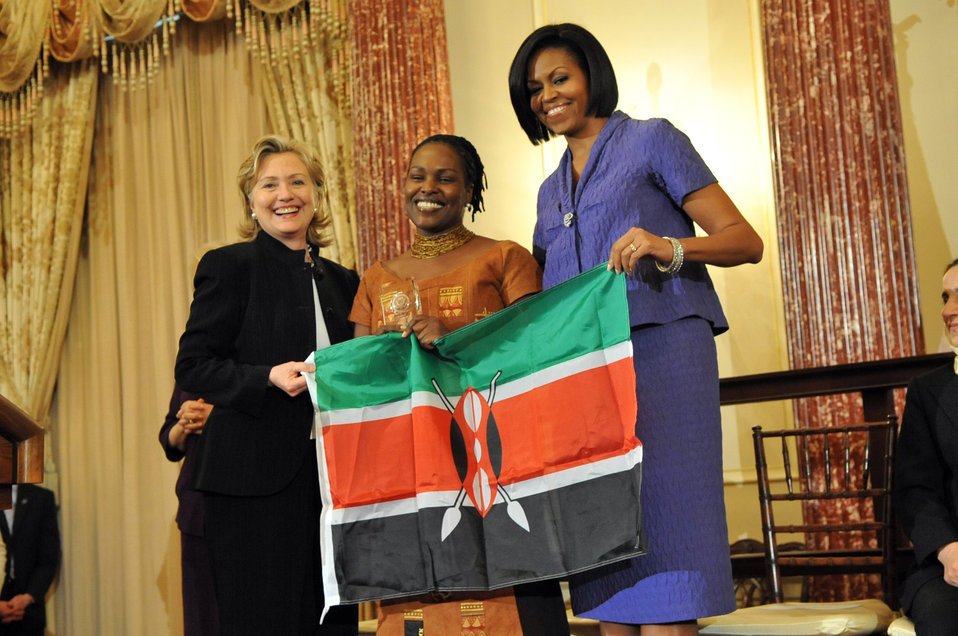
Secretary Clinton Shakes Hands With Honoree Ann Njogue

U.S. Secretary of State Hillary Clinton and First Lady Michelle Obama stand with Honoree Ann Njogu of Kenya at the 2010 International Women of Courage Awards at the U.S. Department of State, Washington, D.C. March 10, 2010.